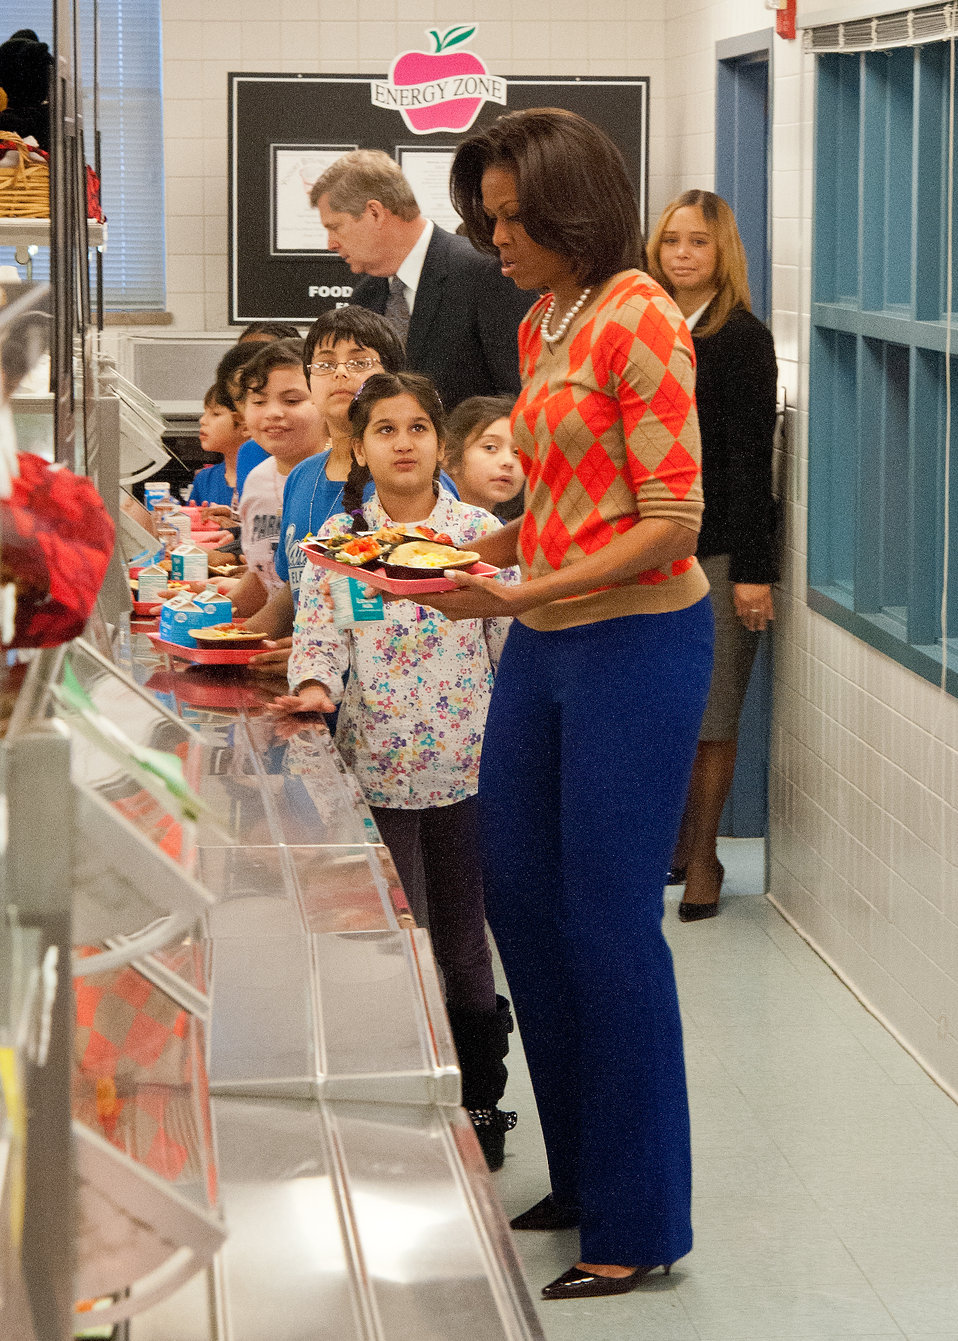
A student at Parklawn Elementary School assists First Lady Michelle Obama with her lunch selection. Mrs. Obama and Agriculture Secretary Tom Vilsack joined children in the lunch line at Parklawn Elementary School Alexandria, Virginia, on Wednesday, January 25, 2012. The school’s food service employees and celebrity cook Rachael Ray served one of her recipes of ground turkey tacos, Mexican brown rice and black bean and corn salad accompanied by mixed fruit. Together, the meal created a healthy, delicious meal that meets new and improved nutrition standards for school lunches.